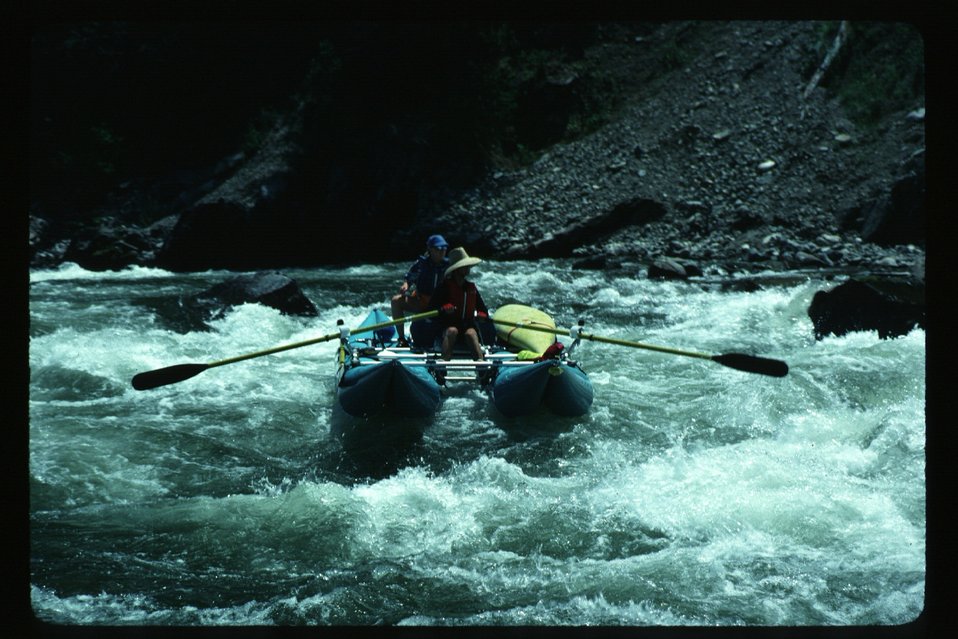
Kayaker in white water Kayaking Four Rivers Field Office LSRD Lower Snake River District